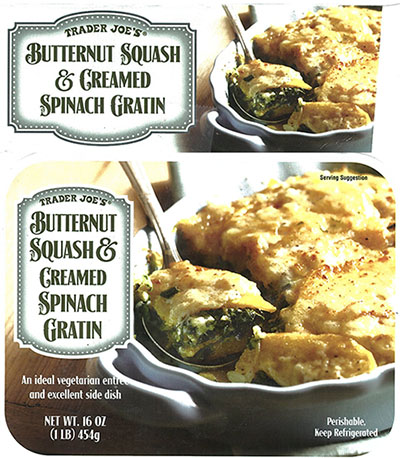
RECALLED - Butternut Squash and Creamed Spinach Gratin

December 2, 2013 – Product Recall – Huxtable’s Kitchen Issues Voluntary Allergy Alert on Undeclared Allergens in Butternut Squash & Creamed Spinach Gratin.